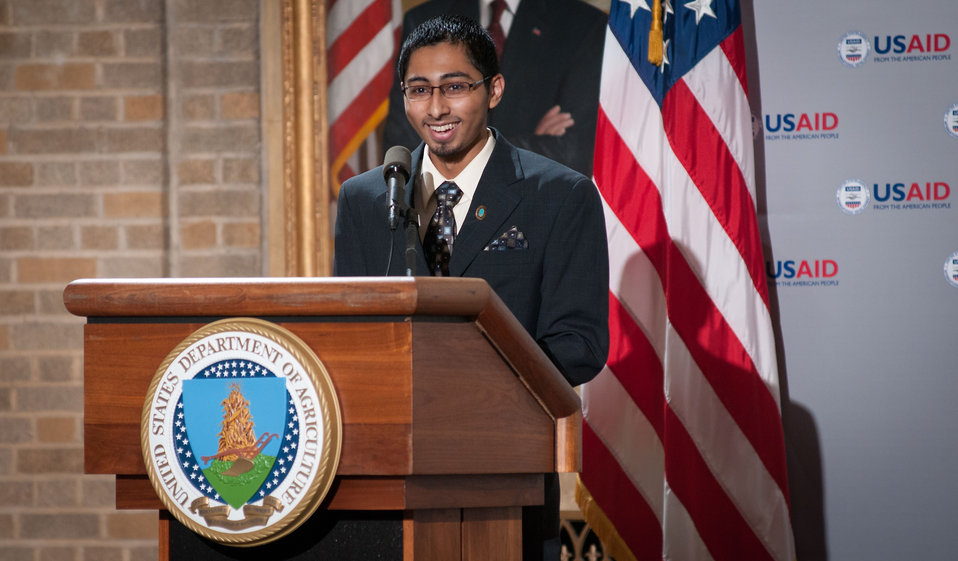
Aman Chhipa explained and performed the Adhaan, call to prayer, for the Iftar celebration, co-sponsored by the U.S. Department of Agriculture, U.S. Agency for International Development (USAID) and Islamic Relief USA, on Tuesday, August 7, 2012, in the USDA Whitten Building, in Washington, D.C. Ramadan is the month of fasting, intensive prayer, sacrifice and worship for Muslims around the world. Throughout this month, Muslims fast during the day, abstaining from consuming food from dawn to dusk and using this time to purify spiritually. Fasting reminds Muslims of the poverty and hunger suffered by many in the United States and worldwide. It is a connection with those who are hungry not through devotion, but through the many global factors that lead to hunger and famine. Iftar is the meal at which Muslims break their fast at sunset, usually by eating dates, according to the Prophetic tradition.